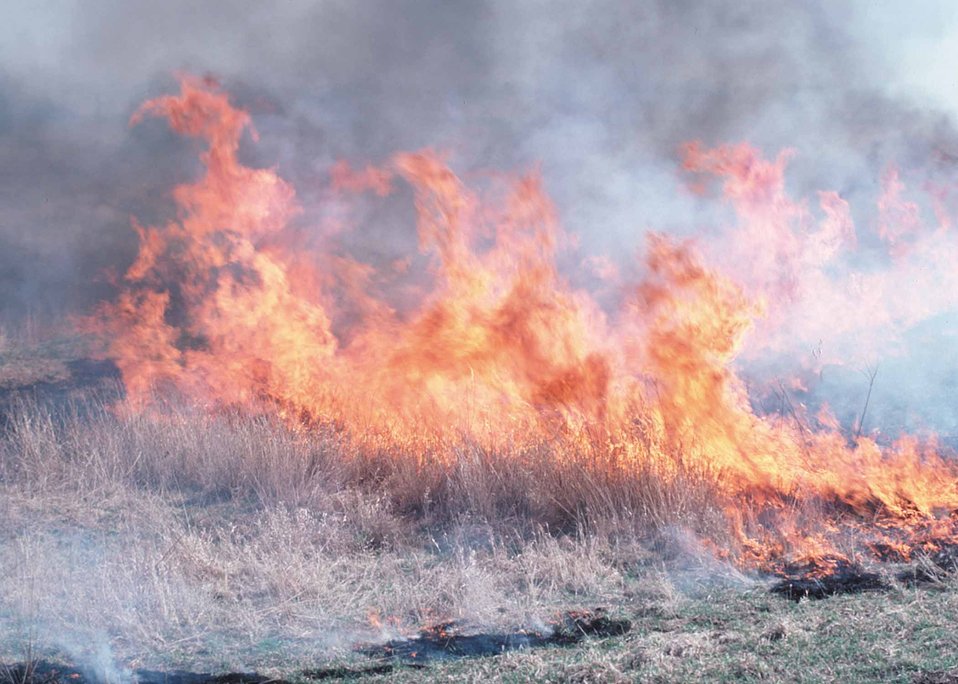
Fire is used as a management practice to improve native grass fields in Iowa.